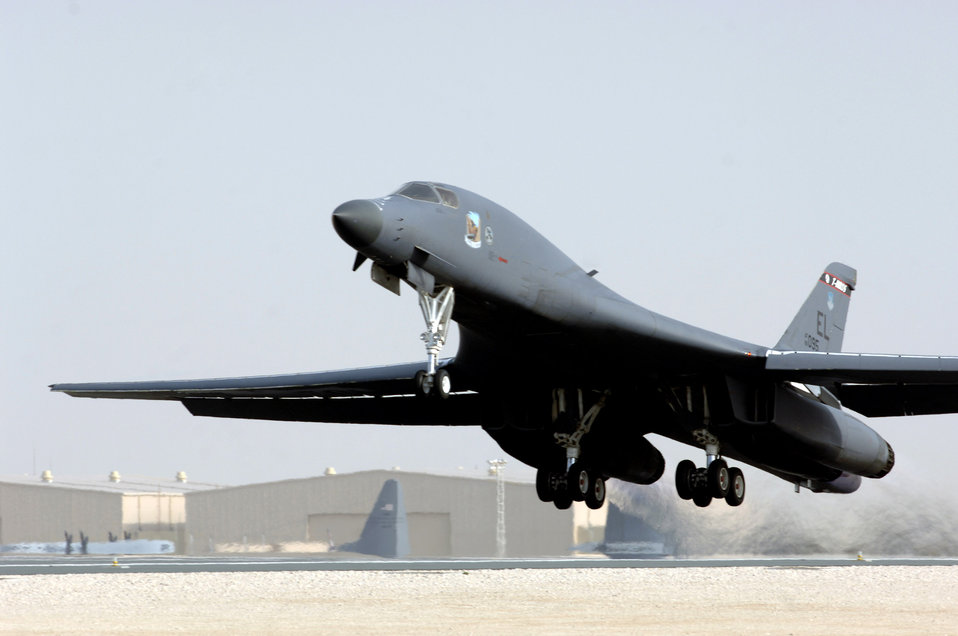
Airmen tackle increased operations tempo

A B-1B Lancer takes off from the 379th Air Expeditionary Wing in Southwest Asia. B-1s from the 34th Expeditionary Bomb Squadron were once again called on to increase operations in support of ground forces in Afghanistan through precision bombing and shows of force and presence.